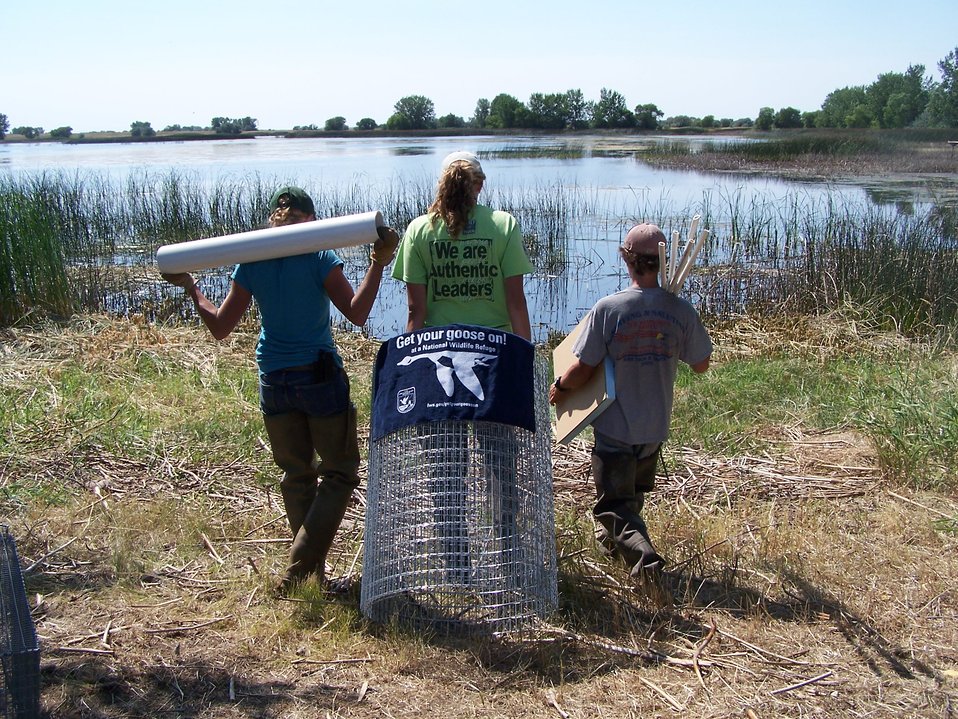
Get Your Goose On! - While Trapping Ducks

Bowdoin STEPs Get Their Goose On to go and assemble duck swim-in traps.